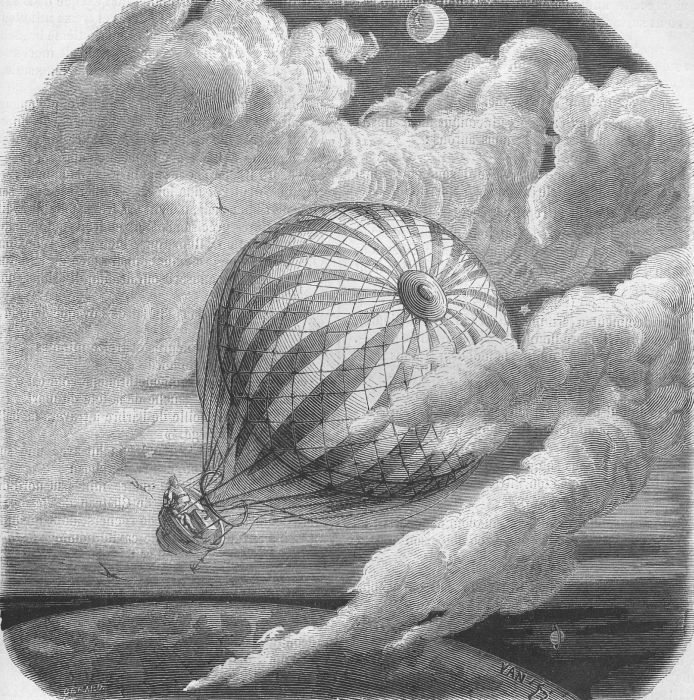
An illustration from Jules Verne's essay 'Edgard Poë et ses oeuvres' (Edgar Poe and his Works,1862) drawn by Frederic Lix or Yan' Dargent. Polski: Ilustracja artykułu Juliusza Verne'a 'Edgard Poë et ses oeuvres' (Edgar Poe i jego dzieła, 1862) autorstwa Frederica Lixa lub Yan' Dargenta. Français : Jules Verne: 'Edgard Poë et ses oeuvres' (1862), dessins par Frederic Lix ou Yan' Dargent. Orginal text: Français : Voyage d’Hans Pfaall à la lune.